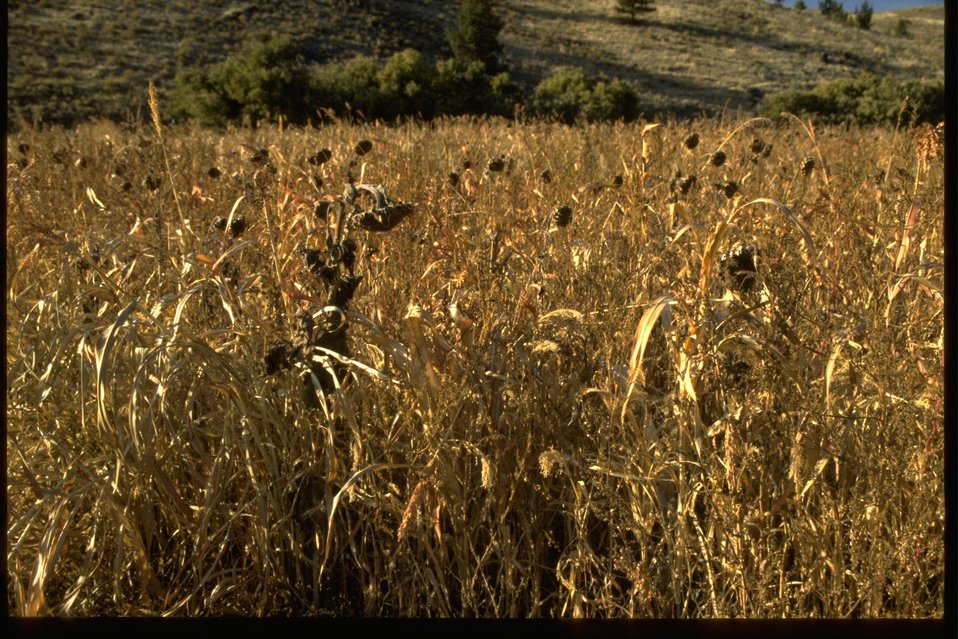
Wild grain and sunflower field in the John Day River area.